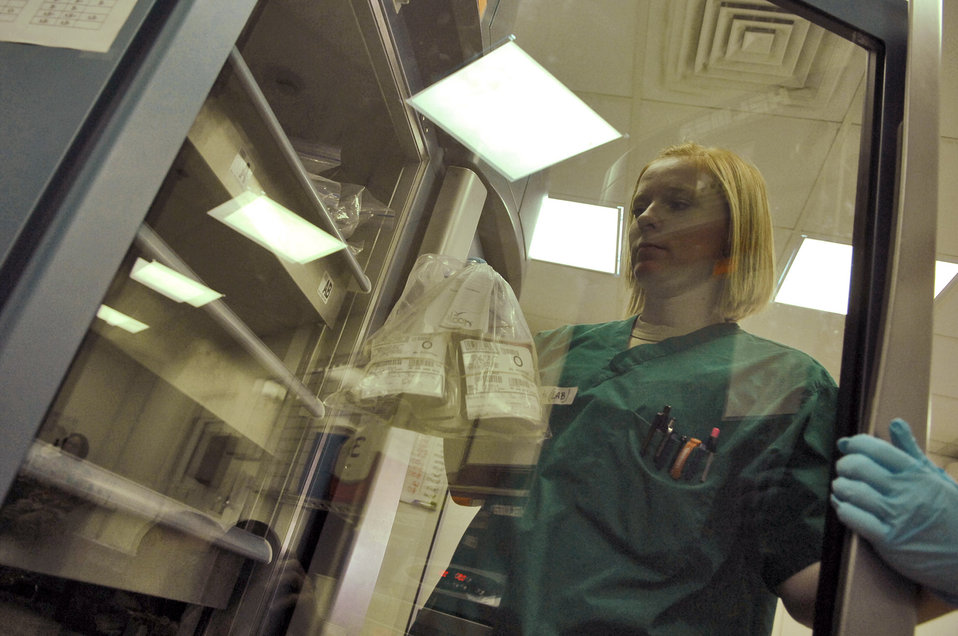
Blood test

Senior Airman Kristi Hales pulls blood products out of a refrigerator to be used for a patient in the emergency room at the Air Force Theater Hospital June 5 at Balad Air Base, Iraq. Lab technicians are on constant alert for emergency situations and have kits prepared for any potential casualties arriving in the emergency room or operating room. Airman Hales is a 332nd Expeditionary Medical Support Squadron lab technician deployed from Lackland Air Force Base, Texas.